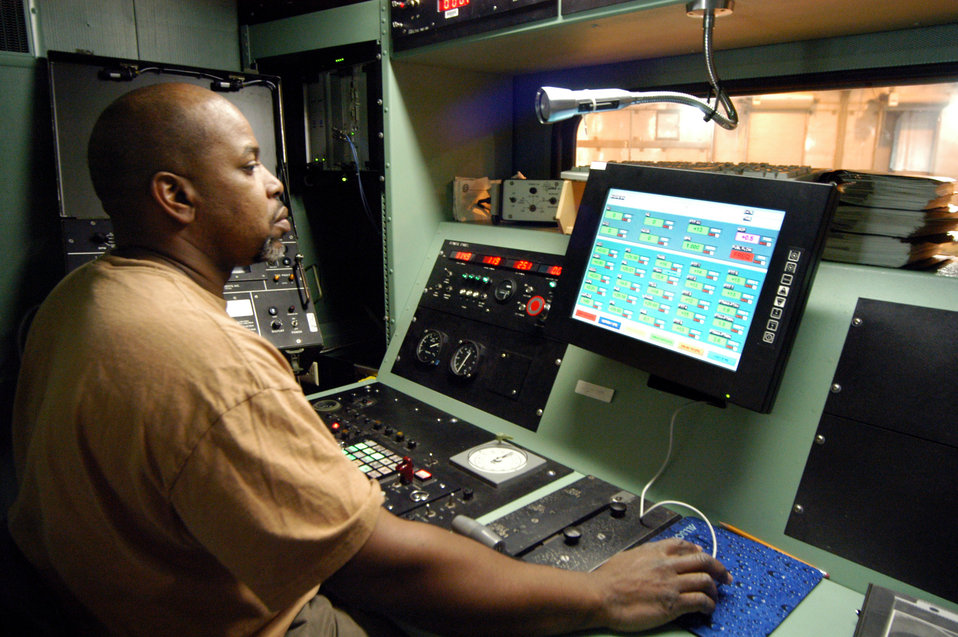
There's a kind of hush…

ROBINS AIR FORCE BASE, Ga. -- Melvin Bates runs an F-15 Eagle engine from inside the cab at the